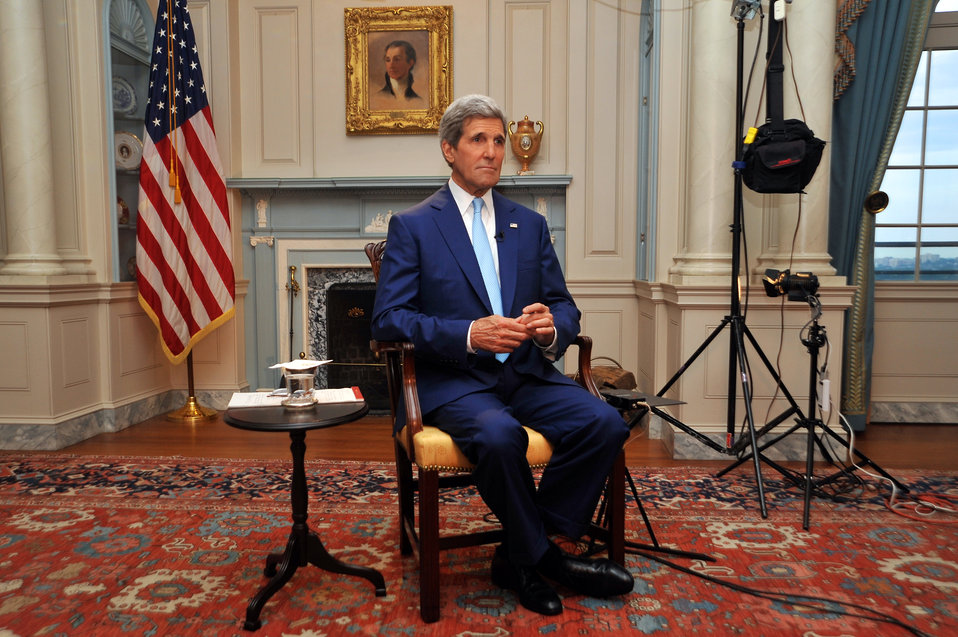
Secretary Kerry Does Round of Interviews Before President Obama's West Point Speech

U.S. Secretary of State John Kerry sits in the State Department's Monroe Room during a break amid a round of morning network television interviews focused on President Obama's planned speech about foreign policy at the United States Military Academy in West Point, N.Y., on May 28, 2014.